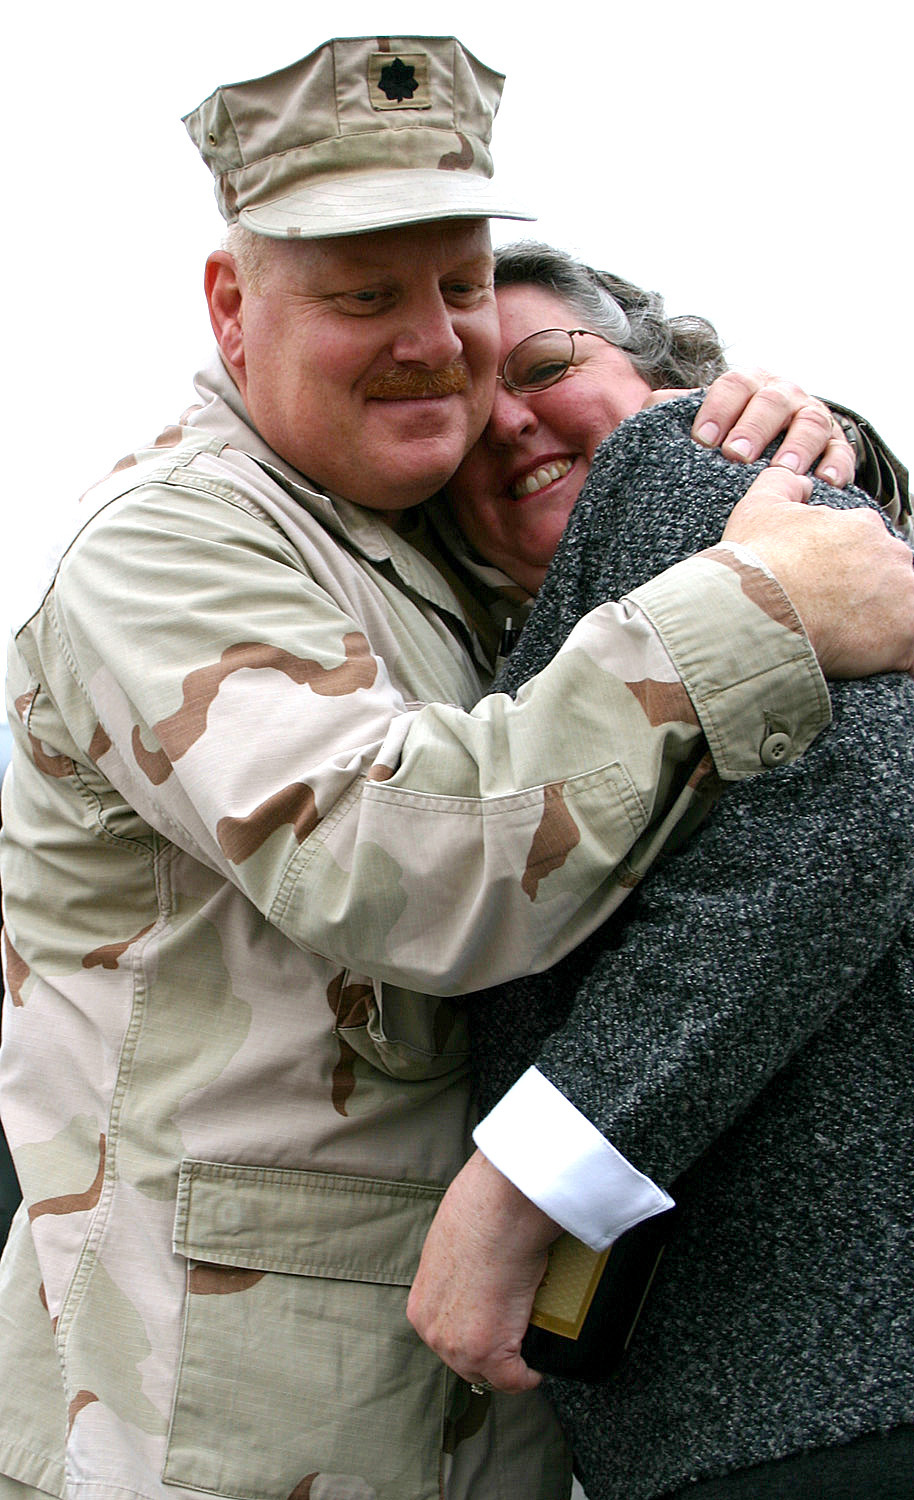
Lt. Col. serves on three AEF rotations

MCGUIRE AIR FORCE BASE, N.J. -- Lt. Col. Tim Doty hugs his wife, Cindy, when he arrived here. The colonel, the 305th Operations Support Squadron, deployed for one year to Afghanistan, where he helped develop and establish an air corps for the Afghan army.